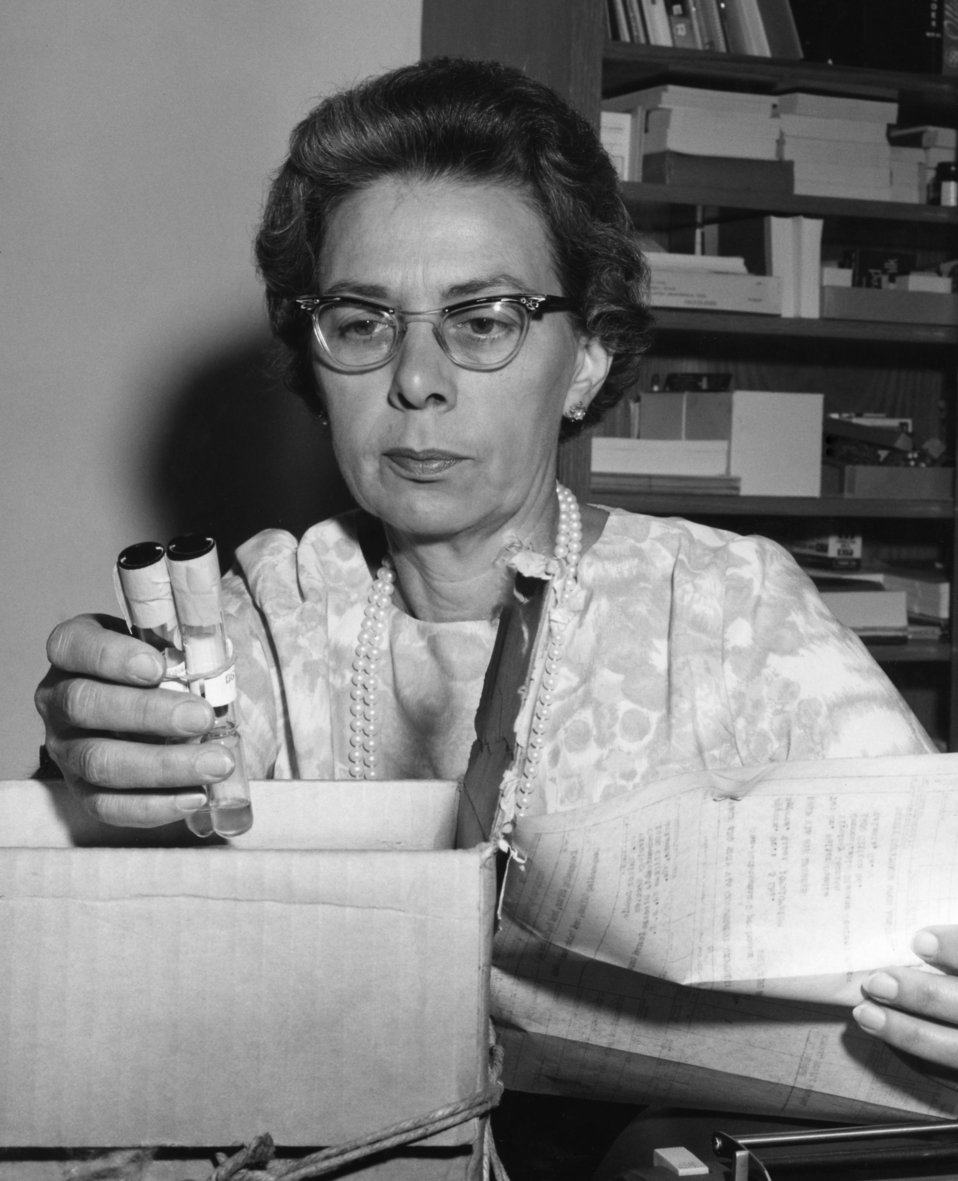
Ms. Beverly Lawrence, former Administrative Assistant in the Respiratory Virus Infections Unit at the Centers for Disease Control and Prevention, was shown here in this 1968 photograph handling test tubes containing frozen throat swab specimens that were to be tested for influenza.